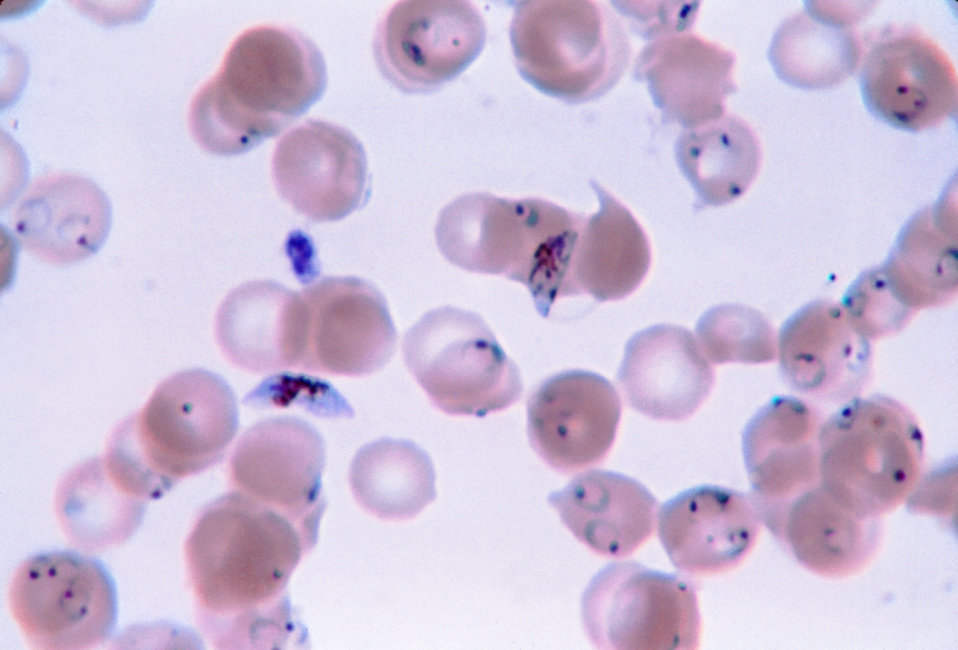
This thin film Giemsa stained micrograph reveals ring-forms, and gametocytes of Plasmodium falciparum.